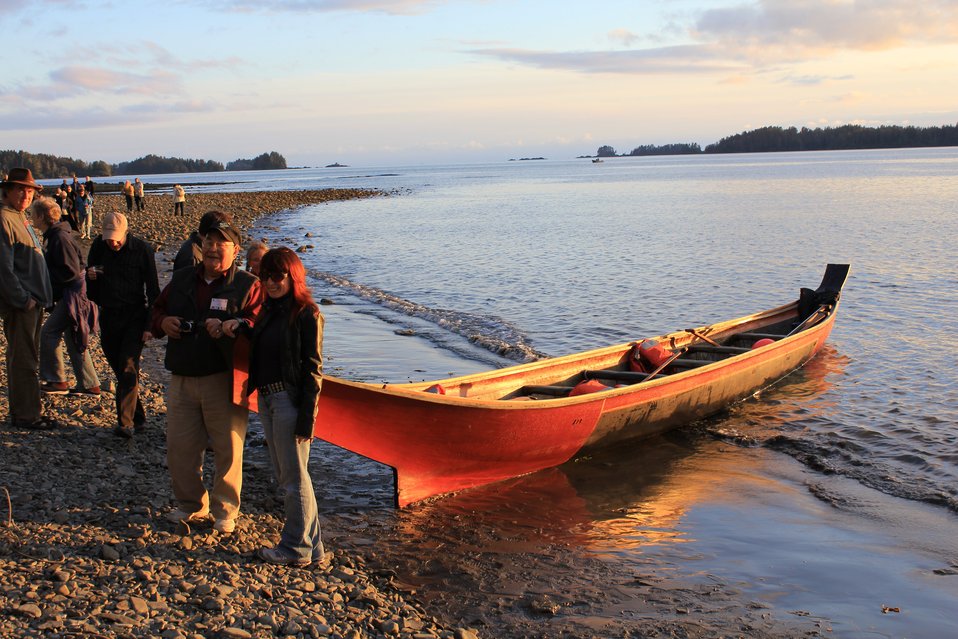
Tlingit cedar canoe made at Sitka National Historic Park as part of revival of Tlingit culture. This canoe was made from a single cedar log.